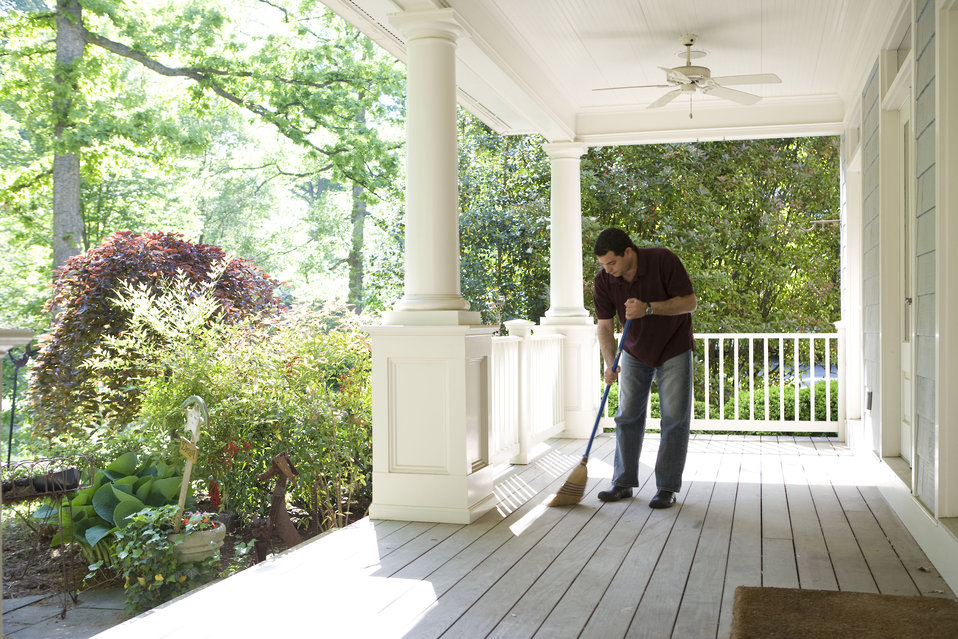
Home maintenance includes both the indoor, and as was the case here, outdoor environment, and is an ongoing process with which a homeowner need to keep up in order to provide for a healthy living space. Keeping your porch dust-free reduces the amount of contaminants tracked into the house.This man was in the process of cleaning his home's porch using a broom, as well as a water hose. In this way, airborne particulates including dust and pollen, could be removed from this area of his home, reducing the detrimental effects upon his family's respiratory systems. These irritants can sometimes result in sinus infections, and asthma.